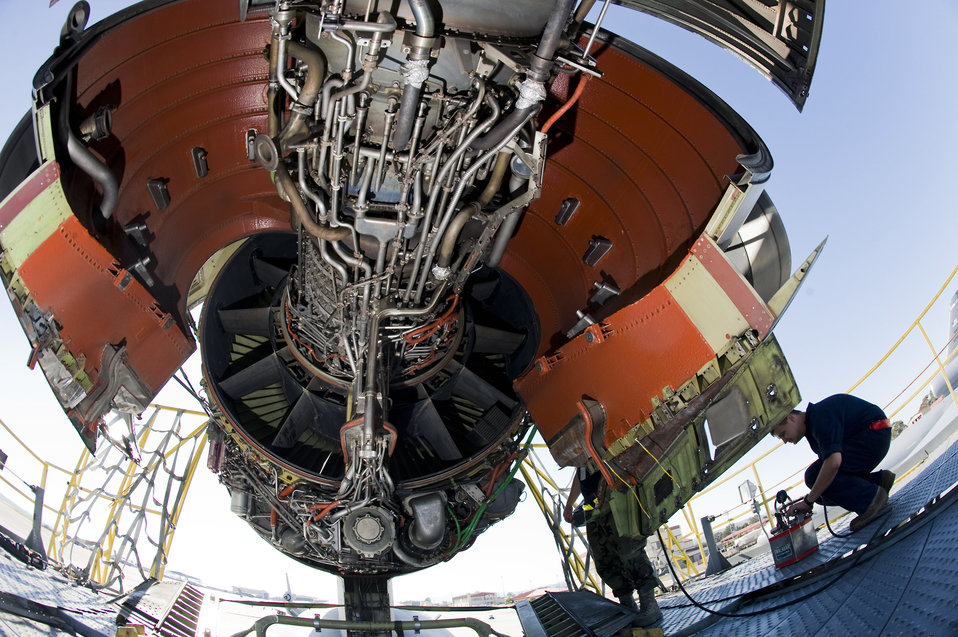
Time to go to work

Tech. Sgt. Christopher Thompson, 660th Aircraft Maintenance Squadron at Travis Air Force Base, Calif., hydraulically opens the engine cowlings of the No. 2 engine on a KC-10 Extender April 18 to repair the control solenoid valve for a thrust reverser.